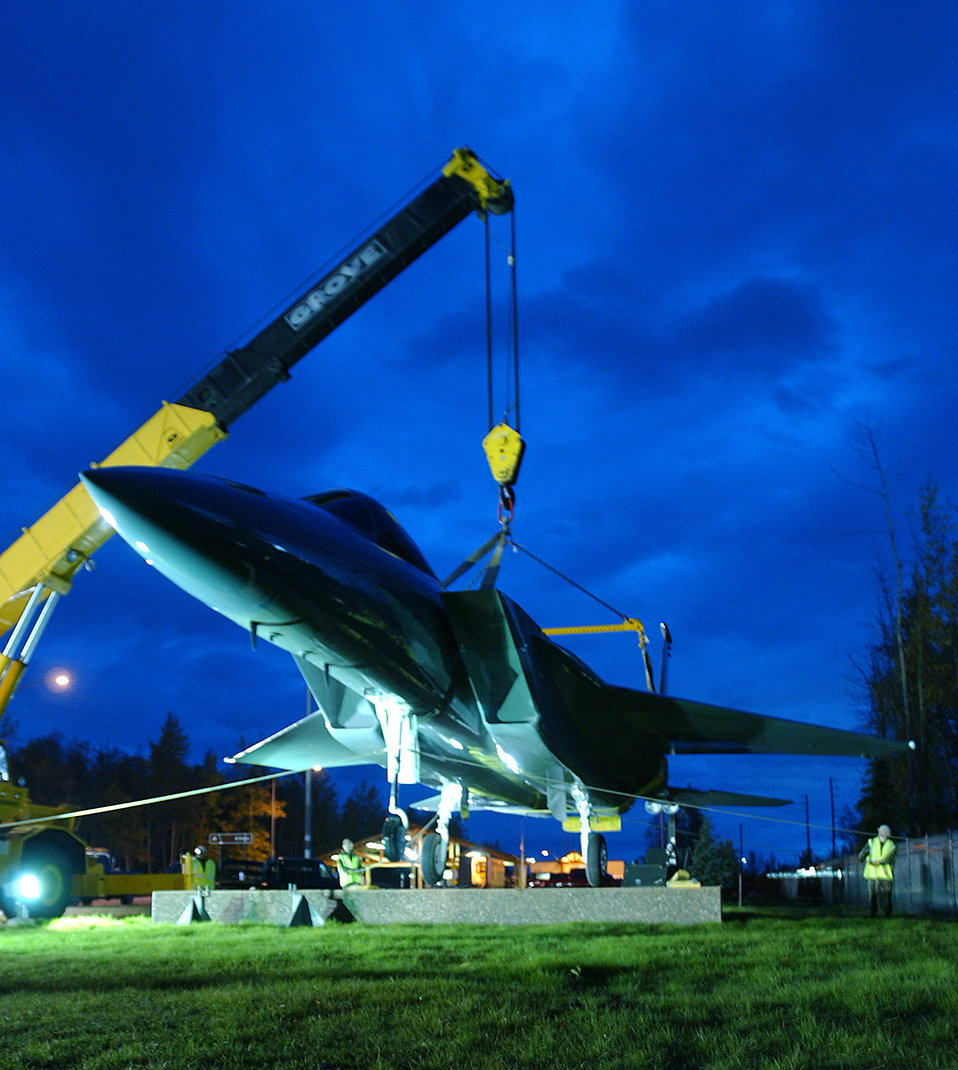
Not-so-static display

ELMENDORF AIR FORCE BASE, Alaska -- An F-15 Eagle is hoisted onto its stand where it became the first static display to sit outside the main gate here. The aircraft was towed across base and down about one mile of a busy highway. With help from the local police department, the highway was shut down for less than an hour for towing of the aircraft.